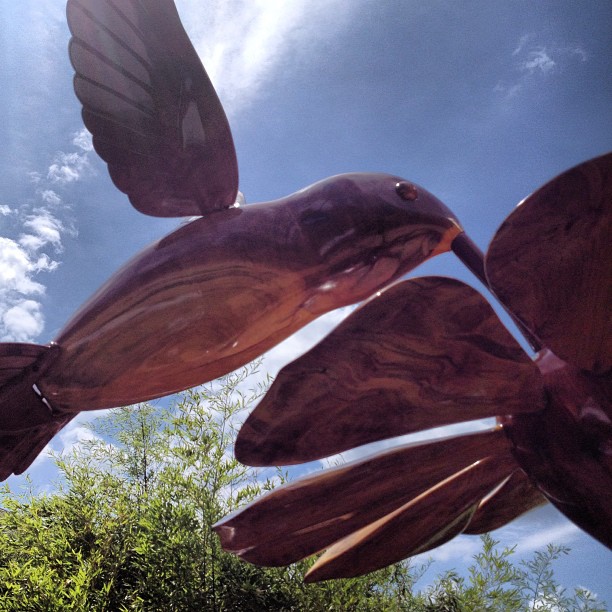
A great day to get outside and celebrate pollinators at the US Botanic #Garden. #dc